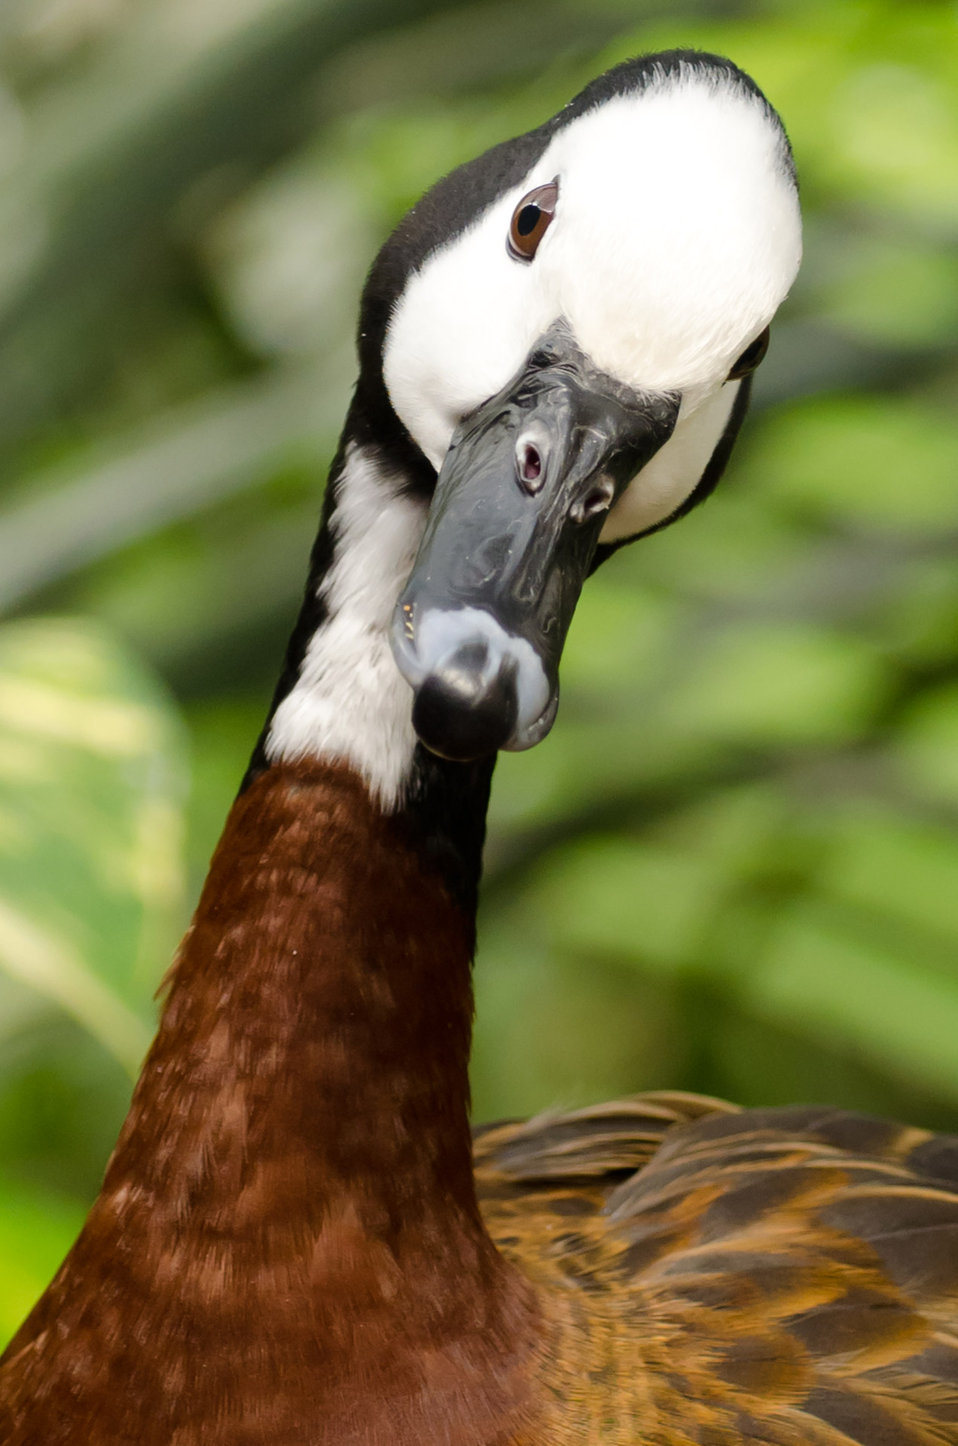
Duck - animals

White faced whistling duck.